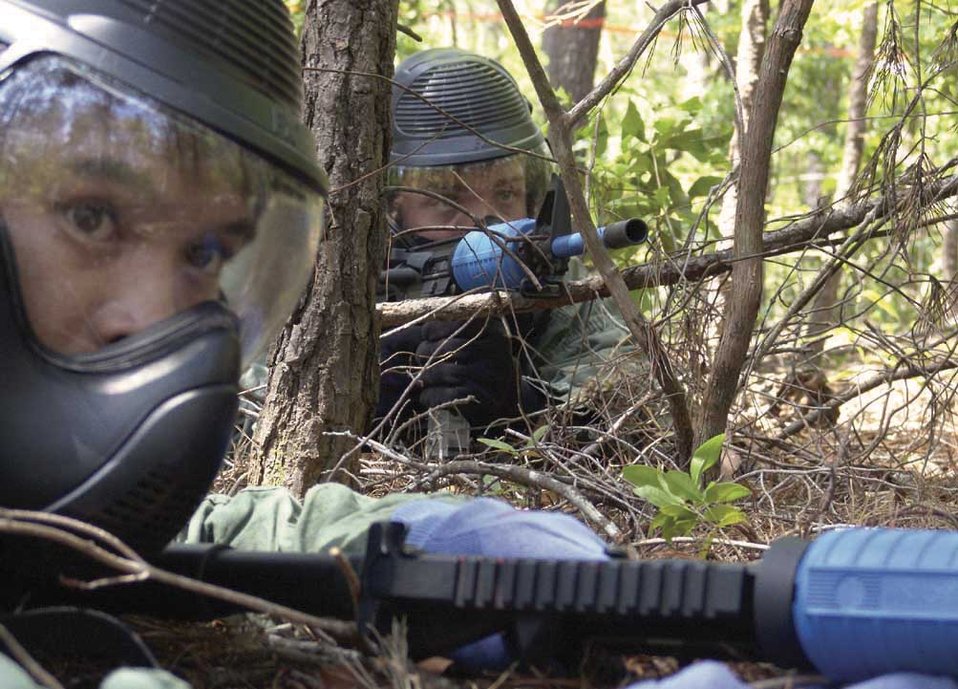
Warrior Day

EGLIN AIR FORCE BASE, Fla. -- Staff Sgt. John Bankston (left) and Airman 1st Class Matt McCaskey search for their opponents during the Warrior Day force-on-force competition. The Airmen are assigned to the 96th Comptroller Squadron.